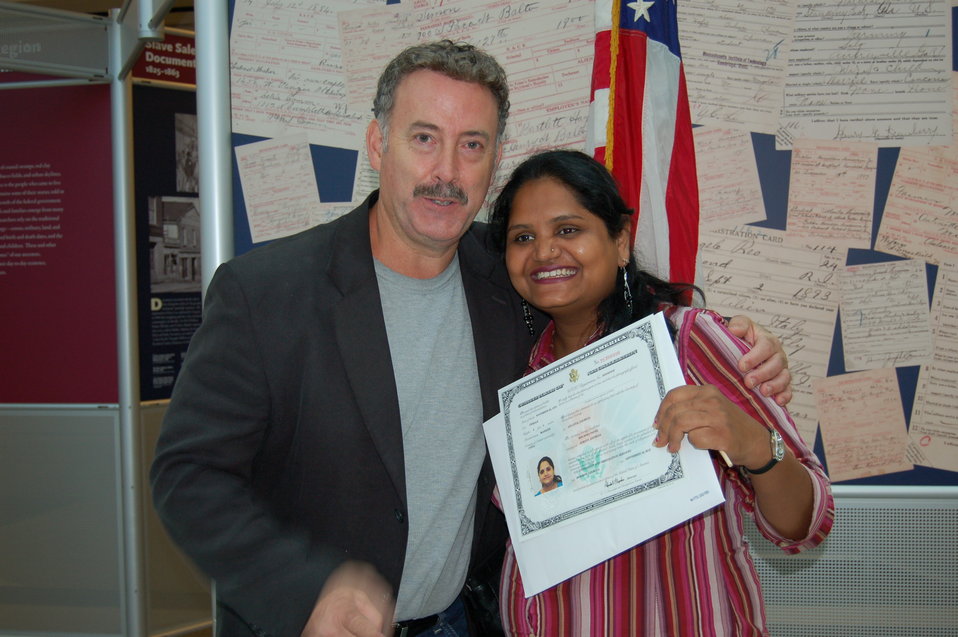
New Citizens